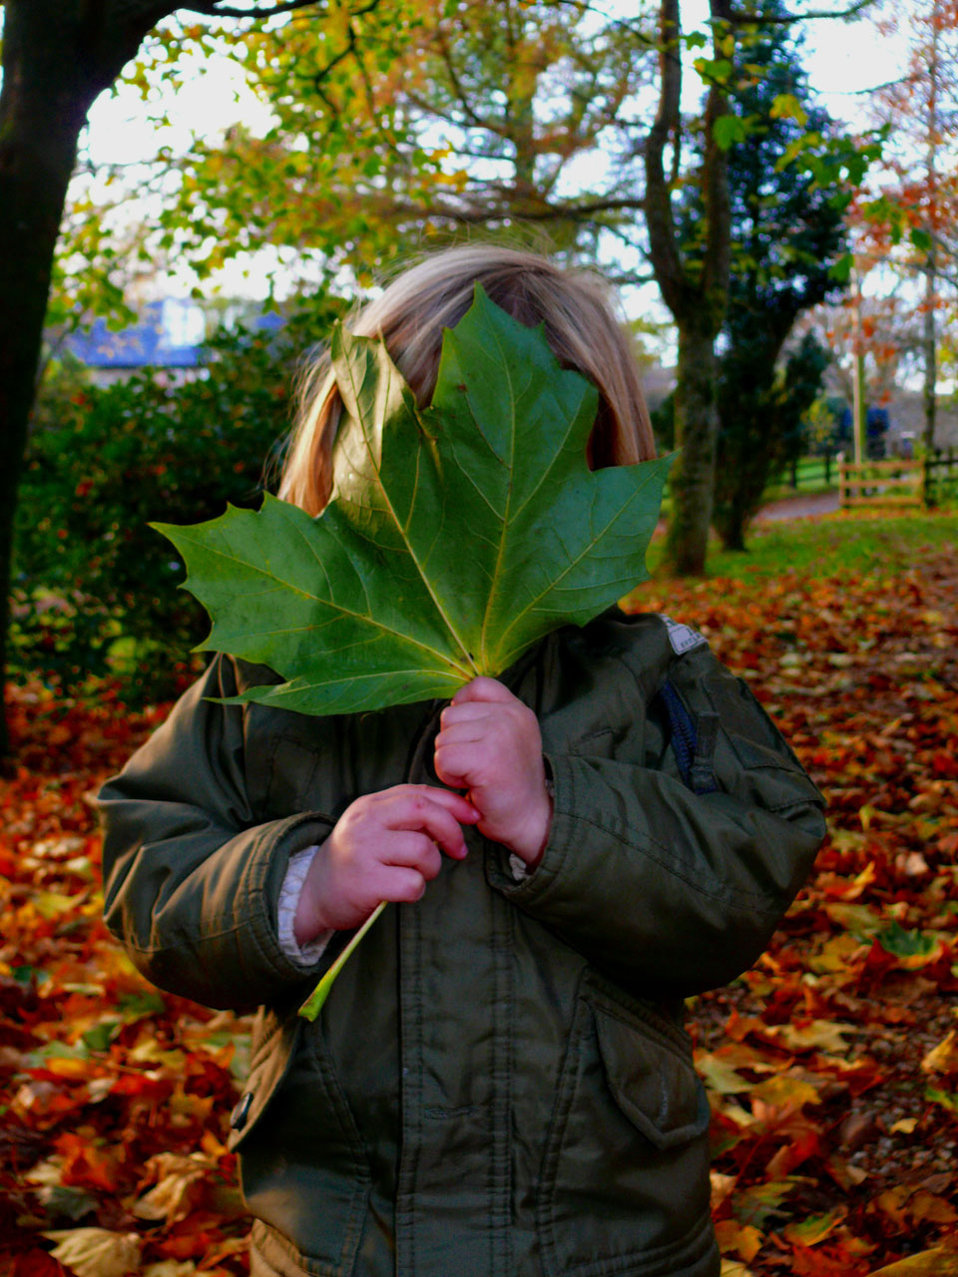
Little girl.